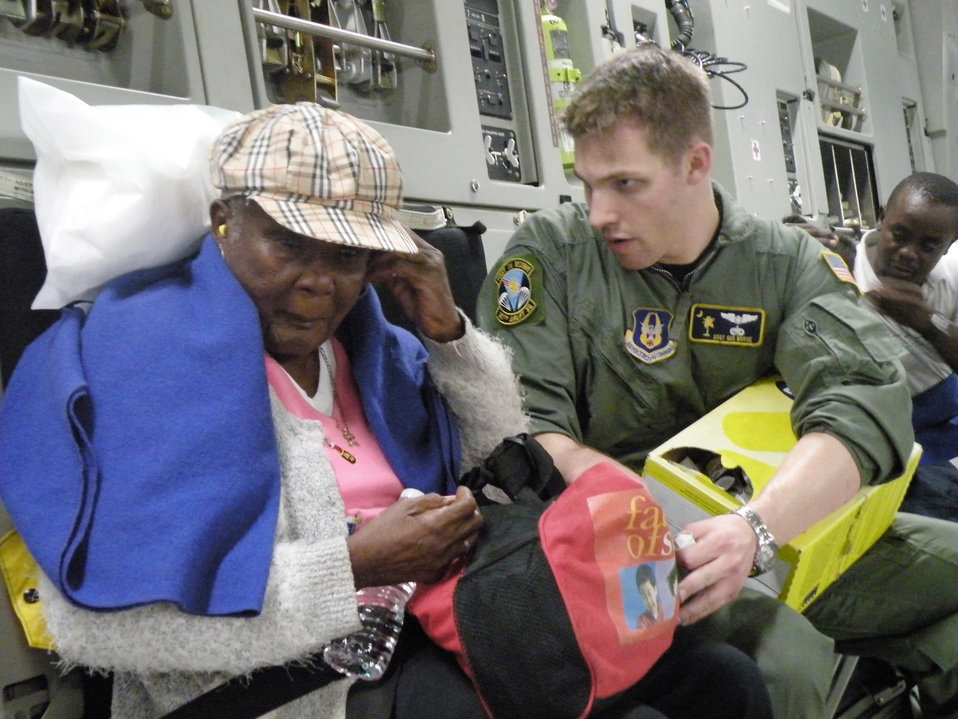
Total force crews support Operation Unified Response in Haiti

Staff Sgt. Gus Morse helps a Haitian woman insert her ear plugs before departure to Orlando, Fla., during the early morning hours of Jan. 22, 2010, in Haiti. Sergeant Morse is a 317th Airlift Squadron loadmaster from Charleston Air Force Base, S.C.